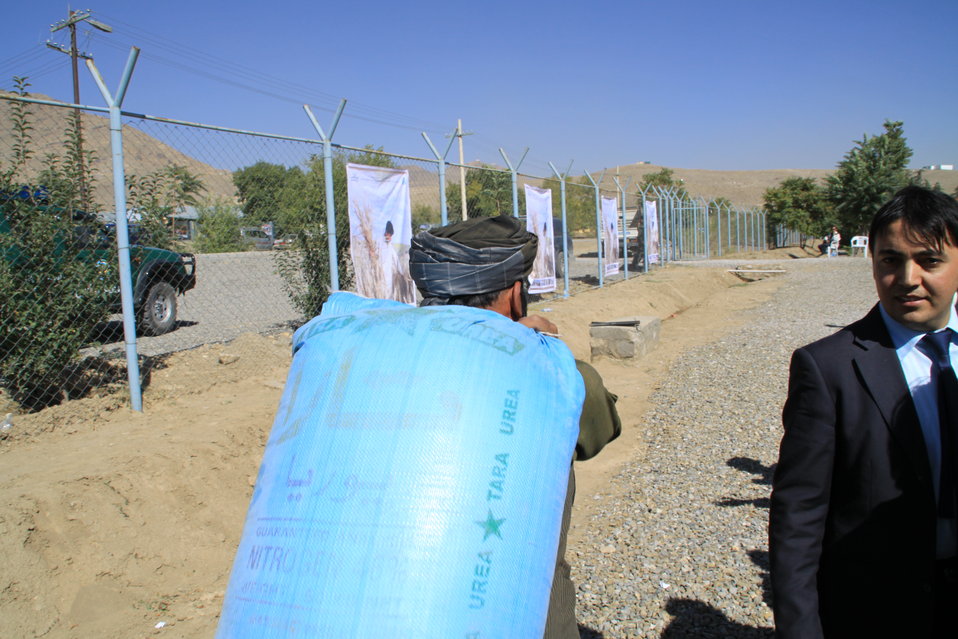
AVIPA Plus Wheat Seed Distribution 101005

US Ambassador Karl Eikenberry and USAID Acting Mission Director Kevin Brownawell joined the Minister of Agriculture, Irrigation and Livestock, H.E. Minister Mohammed Rahimi in signing a Memorandum of Understanding and distributing vouchers to area farmers for wheat and fertilizer.

US Ambassador Karl Eikenberry and USAID Acting Mission Director Kevin Brownawell joined the Minister of Agriculture, Irrigation and Livestock, H.E. Minister Mohammed Rahimi in signing a Memorandum of Understanding and distributing vouchers to area farmers for wheat and fertilizer.

US Ambassador Karl Eikenberry and USAID Acting Mission Director Kevin Brownawell joined the Minister of Agriculture, Irrigation and Livestock, H.E. Minister Mohammed Rahimi in signing a Memorandum of Understanding and distributing vouchers to area farmers for wheat and fertilizer.